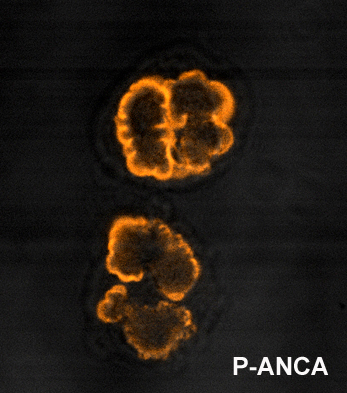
Immunofluorescence pattern produced by binding of serum from a patient with microscopic polyangiitis to ethanol-fixed neutrophils